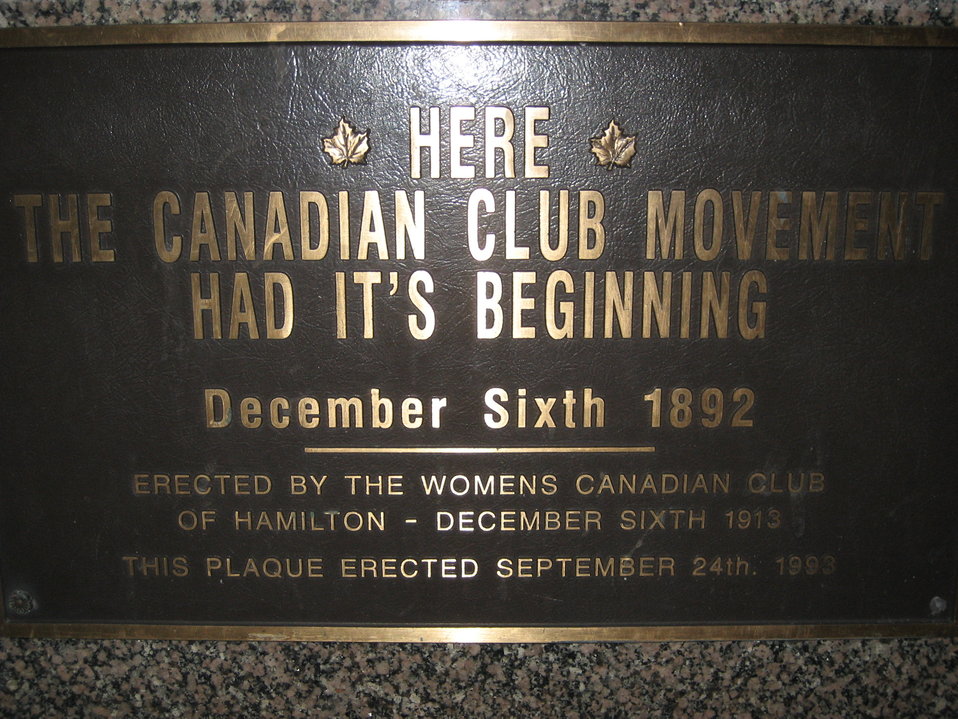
Canadian Club formation plaque, Pigott Building, James Street North, Hamilton, Canada.